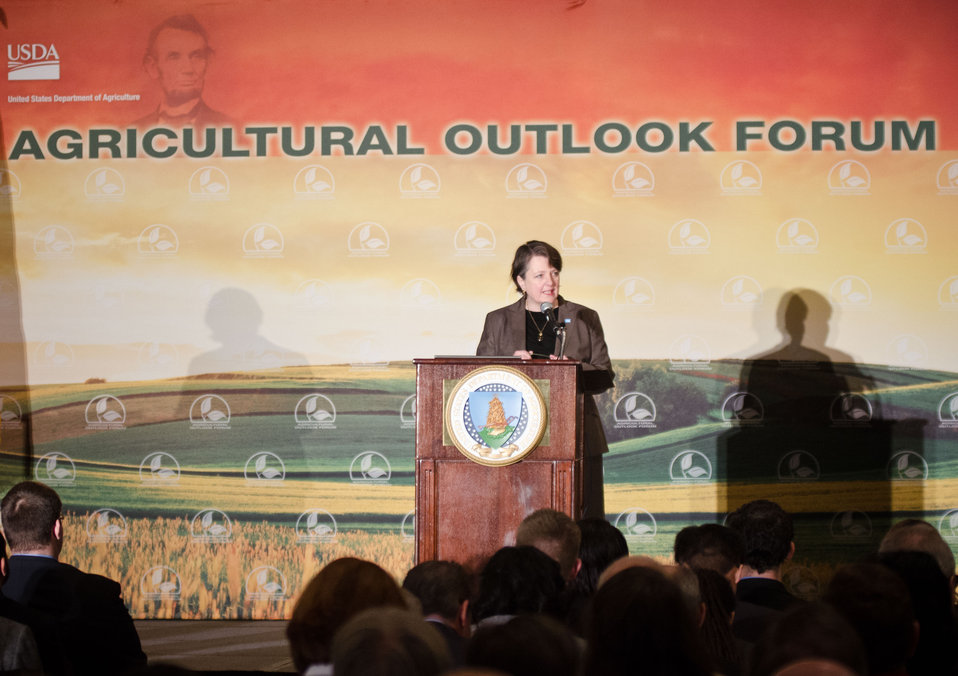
Agriculture Deputy Secretary Kathleen Merrigan makes welcoming remarks at the 2012 Agricultural Outlook Forum, “Moving Agriculture Forward” in Arlington, VA. on Thursday, February 23, 2012.